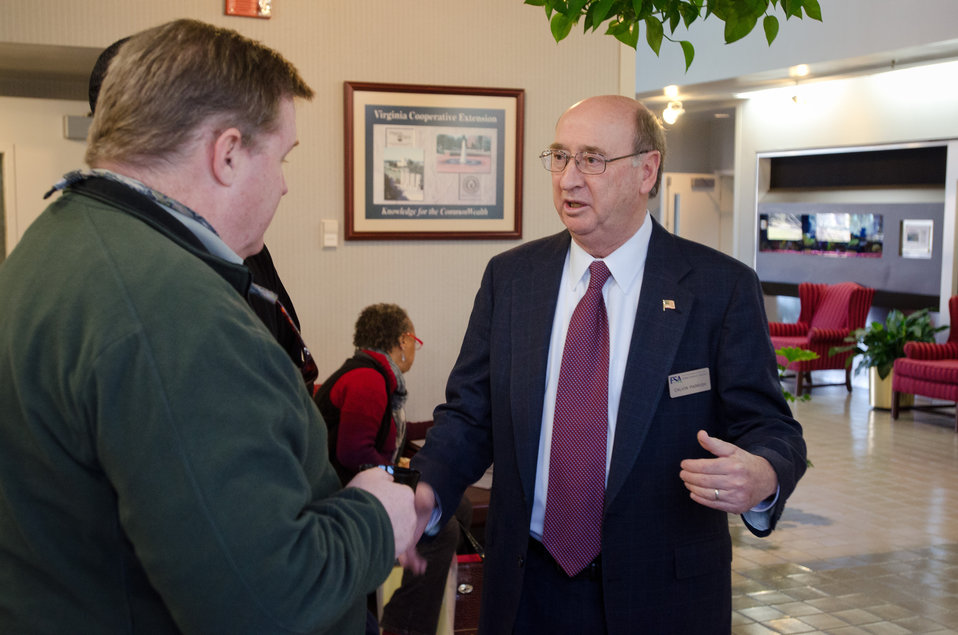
U.S. Department of Agriculture (USDA), Farm Service Agency, Virginia State Director Calvin Parrish, right, at the “Virginia State University (VSU), USDA and Virginia Farmers Working Together” outreach workshop in the VSU, L. Douglas Wilder building on Thursday, March 7, 2013, in Petersburg, VA. Farmers shared and learned new ways to do more with USDA services, and how to apply for programs that will help grow their business.